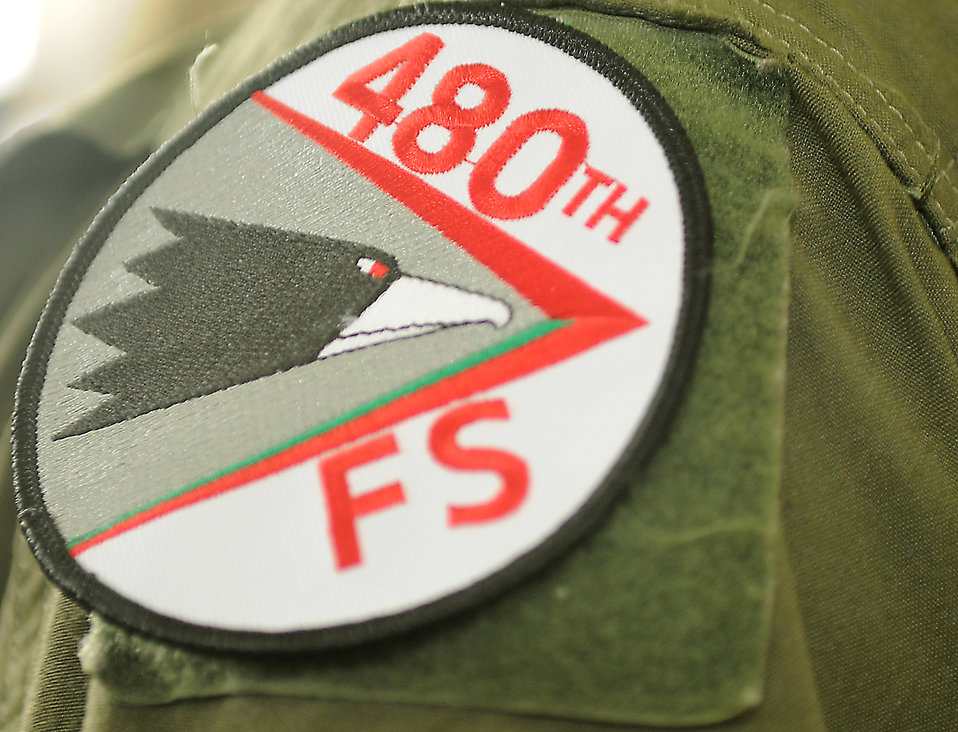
480th FS activated

The 480th Fighter Squadron patch is visible on the arm of an F-16 Fighting Falcon pilot during the 480th Fighter Squadron's activation ceremony Aug. 13, 2010, at Spangdahlem Air Base, Germany. During the ceremony, all 22nd Fighter Squadron Airmen removed their patches and replaced them with new patch.